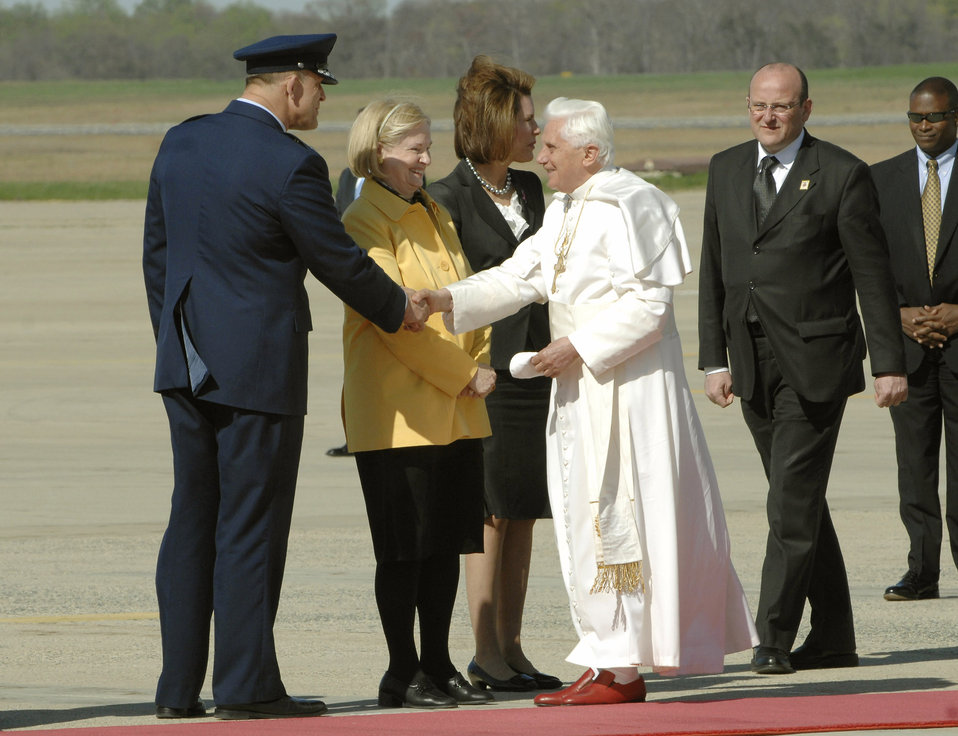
Pope arrives at Andrews

Maj. Gen. Frank Gorenc greets Pope Benedict XVI upon his arrival April 15 at Andrews Air Force Base, Md. The pope is visiting the United States for a week and will meet with President George W. Bush at the White House, address the presidents of Roman Catholic colleges and universities, and celebrate Mass at Nationals Park in Washington, D.C., and Yankee Stadium in New York City. The pontiff was selected as the 265th pope on April 19, 2005. General Gorenc is the Air Force District of Washington commander.